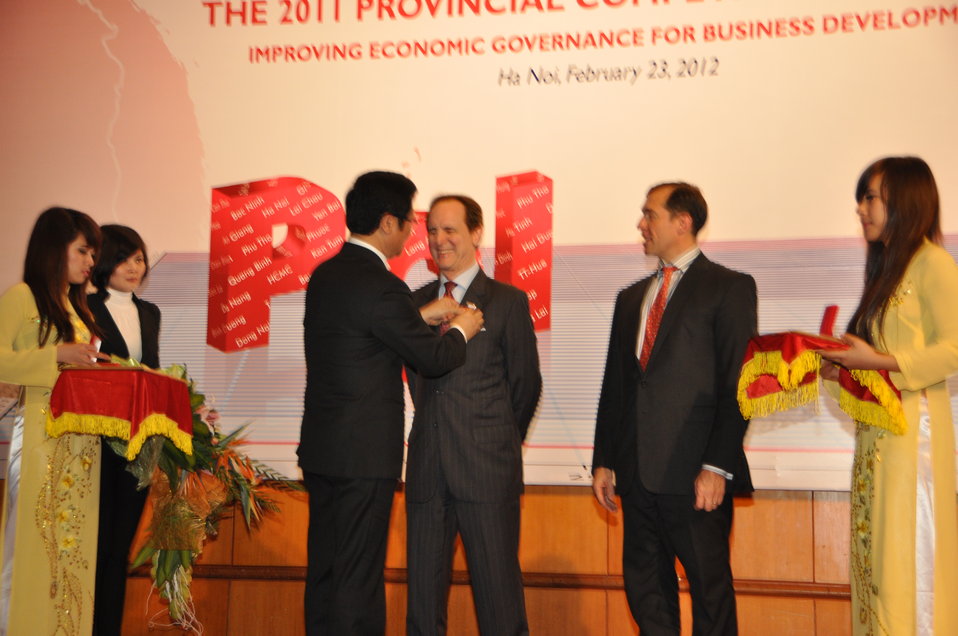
USAID Mission Director Francis Donovan receives award from VCCI Chairman Vu Tien Loc at the Provincial Competitiveness Index 2011 Launch